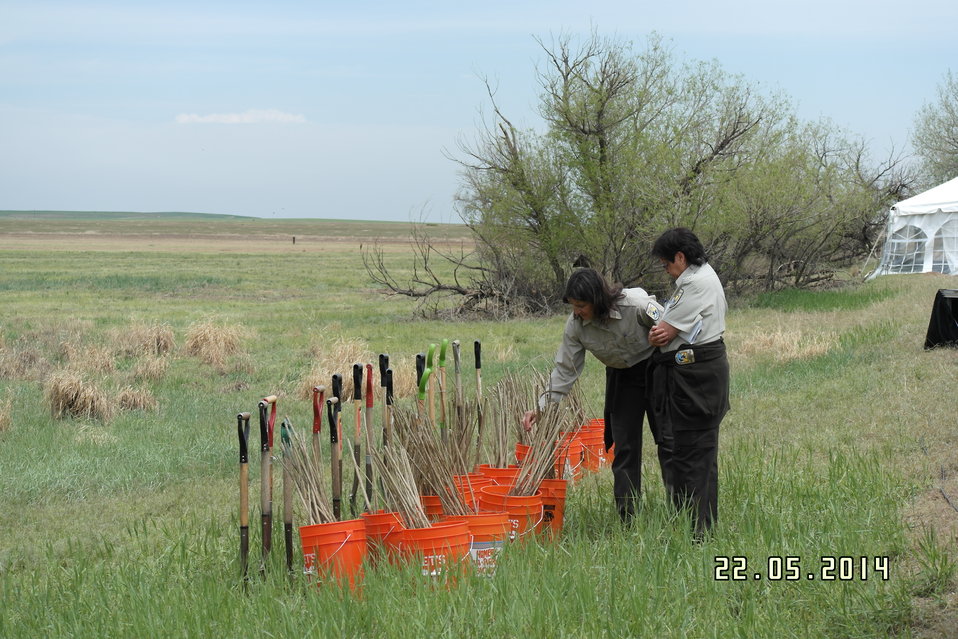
Secretary Jewell Announces $6.7 for Youth Conservation Job

Jewell made the announcement at an event at Rocky Mountain Arsenal National Wildlife Refuge outside Denver, Colorado, where she was joined by U.S. Department of Agriculture (USDA) Deputy Under Secretary for Natural Resources and the Environment Arthur “Butch” Blazer; Greg Knadle, Vice President for Government Relations of the National Fish and Wildlife Foundation (NFWF); Refuge Manager David Lucas and youth corps members of Groundwork Denver.